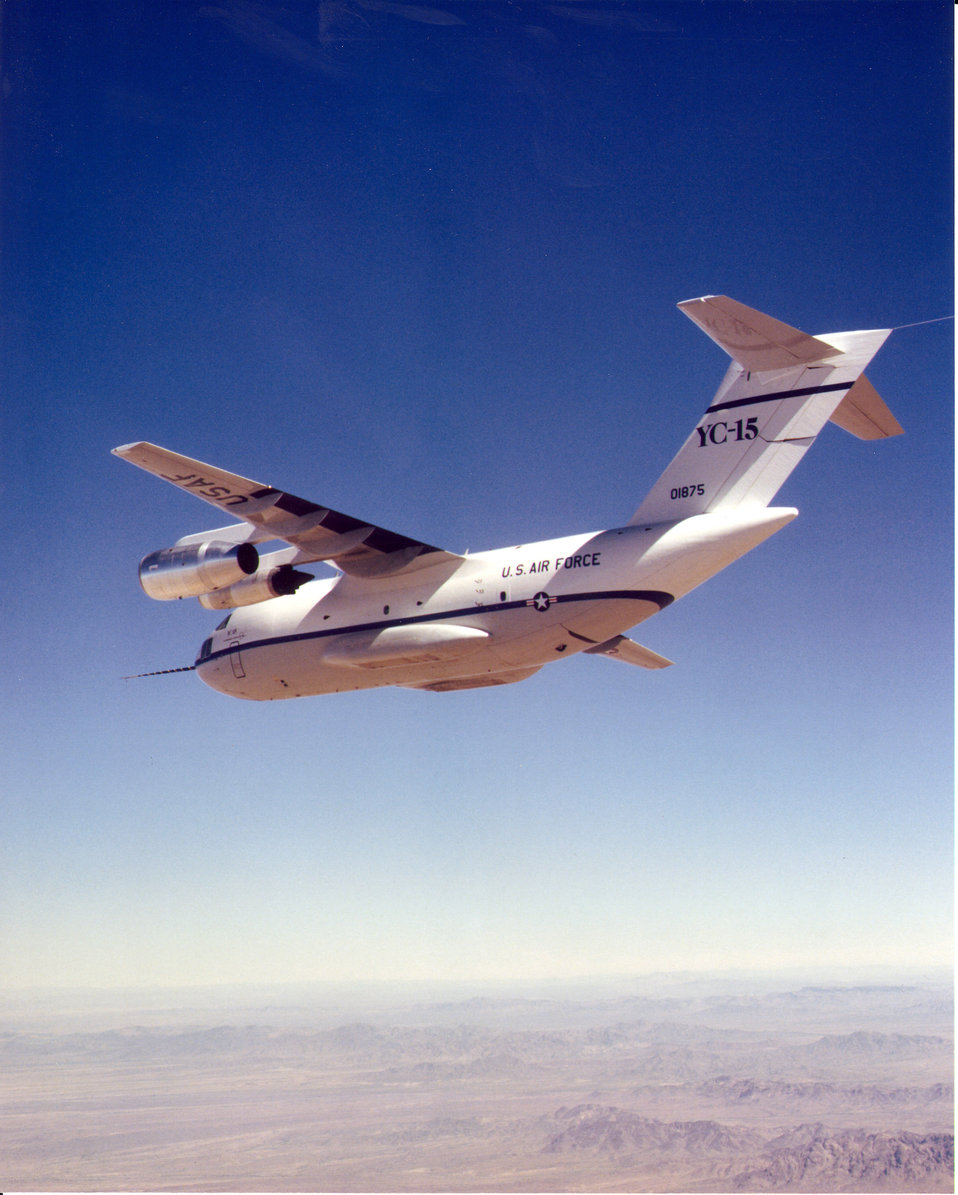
YC-15 Advanced Medium Short-Takeoff transport concept demonstrator

The YC-15 Advanced Medium Short-Takeoff transport concept demonstrator from McDonnell Douglas flies over Edwards Air Force Base, Calif. The aircraft made its first flight Aug. 26, 1976.